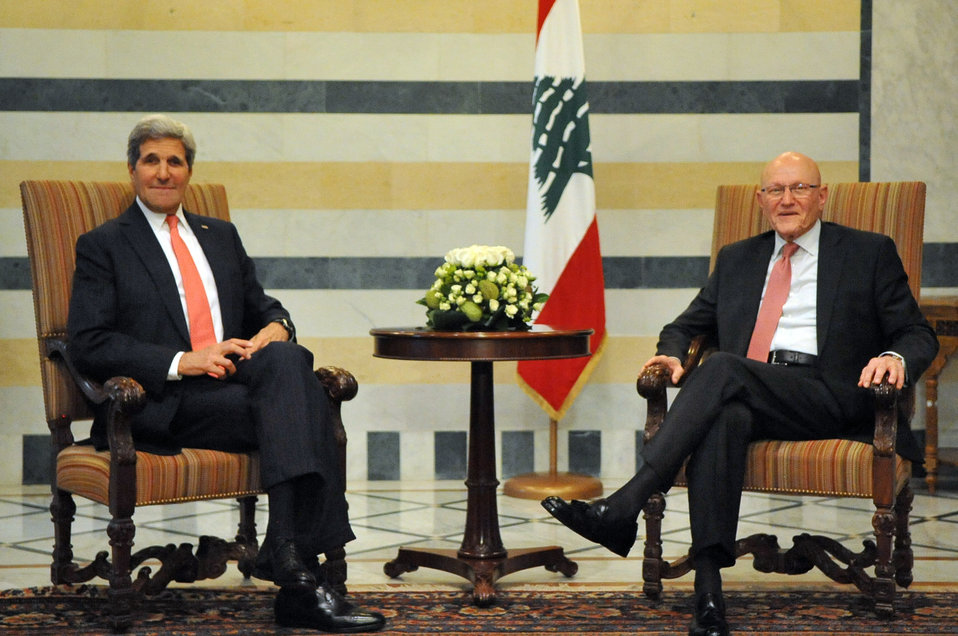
Secretary Kerry Meets With Lebanese Prime Minister Salam in Beirut

U.S. Secretary of State John Kerry meets with Lebanese Prime Minister Tammam Salam at the Prime Minister's office in Beirut, Lebanon, on June 4, 2014.